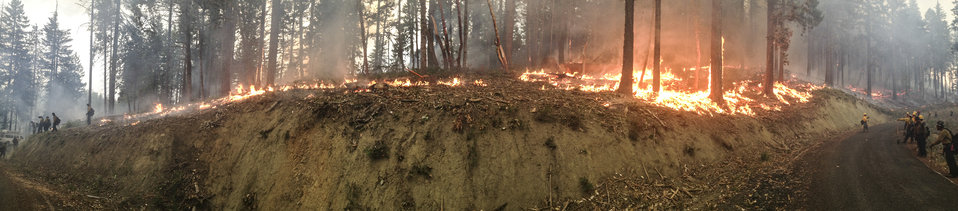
Panorama of the Geronimo Interagency Hotshot Crew (IHC) keeps watch on their burnout along a forest road. This will help stop the main fire when it comes to this location in the Big Windy Complex, approximately 15 miles west of Interstate 5 and northeast of Galice, OR, on Friday, Aug 9, 2013 in Oregon. The Geronimo Hotshots are from the San Carlos Apache Tribal Natural Resources Program, in San Carlos AZ. Hotshots are highly trained wildlands firefighters that normally work in remote locations under arduous conditions.